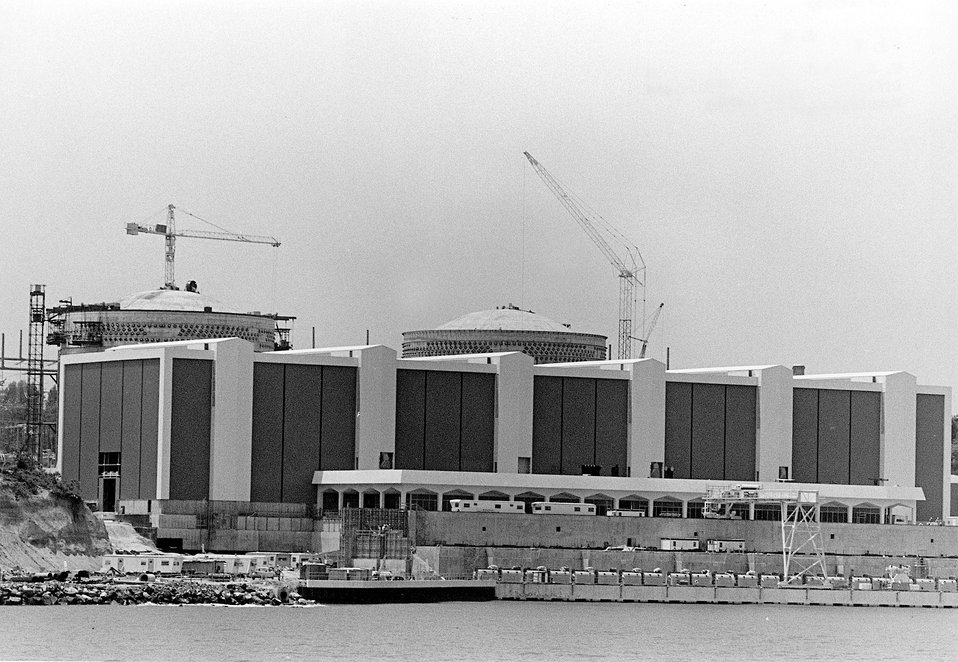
The Calvert Cliffs nuclear electric generating station located on the western shore of the Chesapeake Bay in Maryland. Circa 1971.